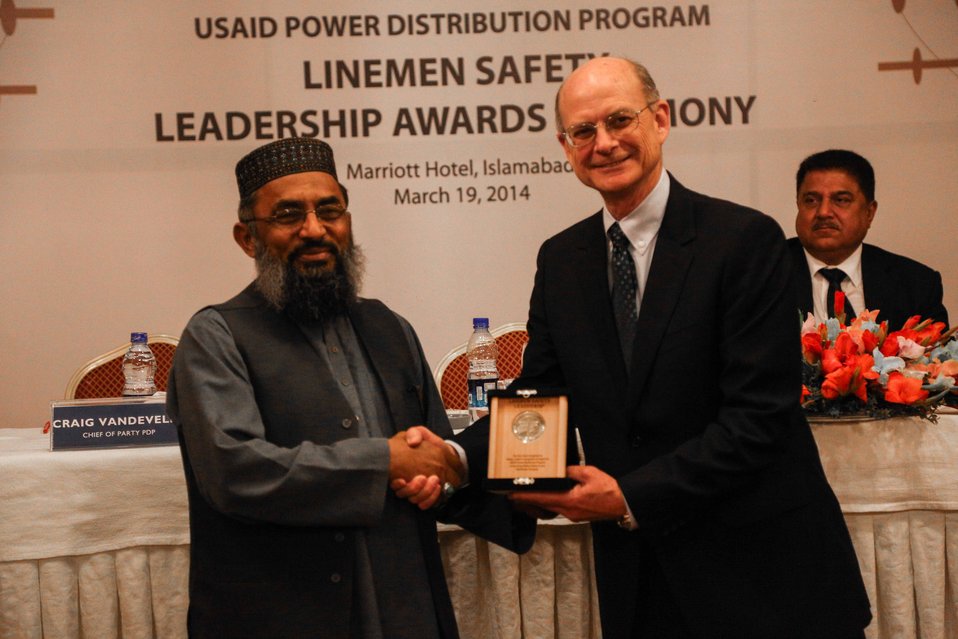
Syed Shafqat Hussain Receiving an Award from USAID Energy Office Director Michael Curtis.